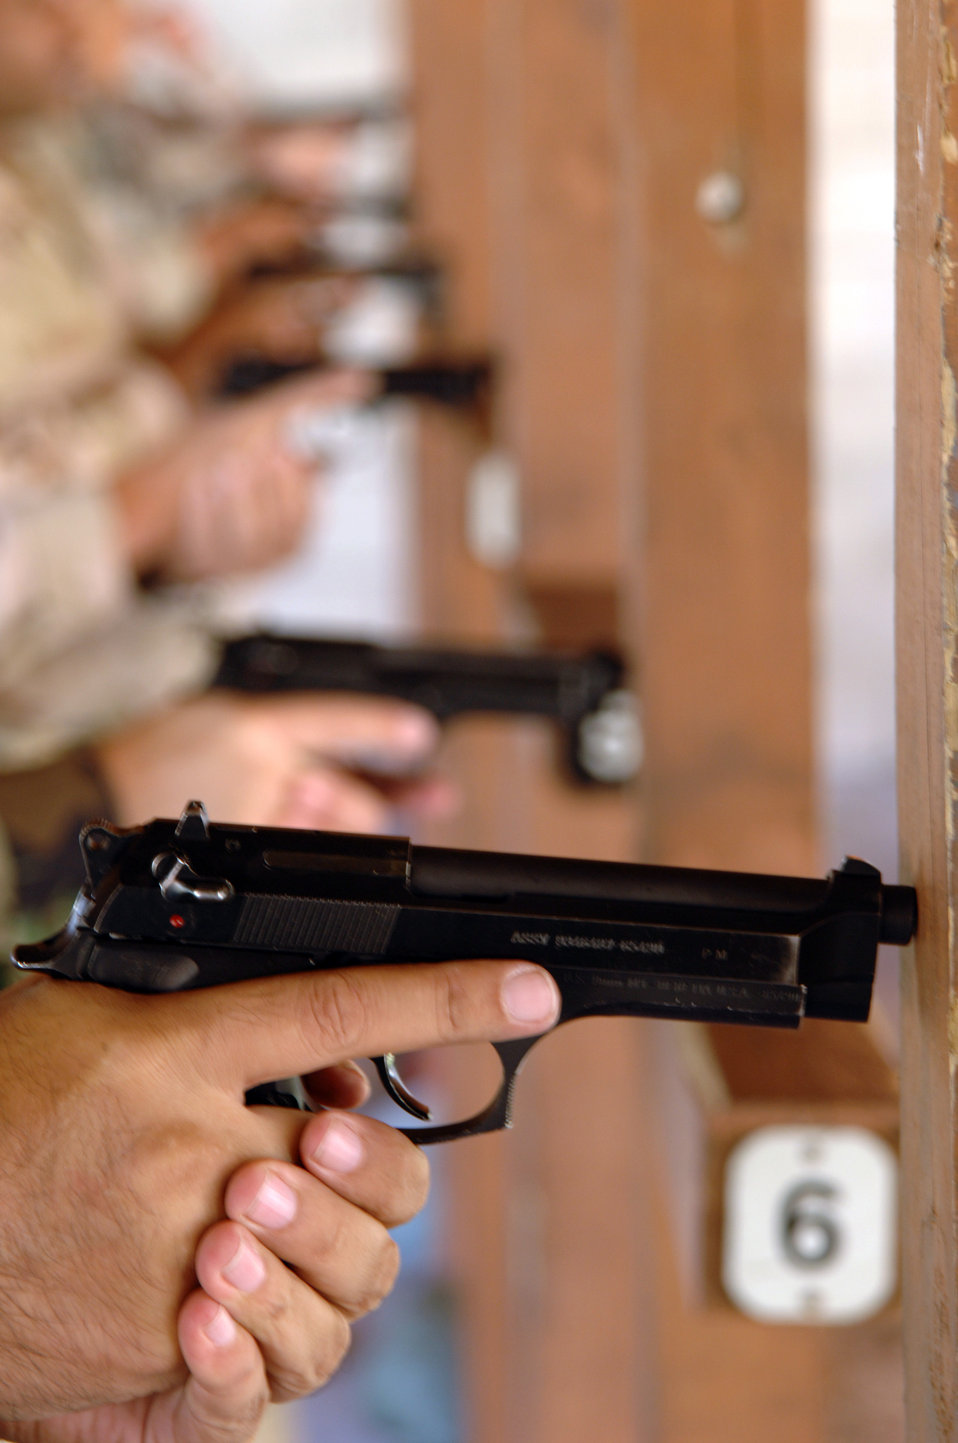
Combat arms training

Servicemembers assigned to MacDill Air Force Base, Fla., take safety measures before firing the Beretta M-9 pistol during a combat arms training and maintenance class at MacDill Air Force Base, Fla., on Monday, March 27, 2006. The instructors teach servicemembers and Department of Defense civilians how to maintain and safely operate fire arms.